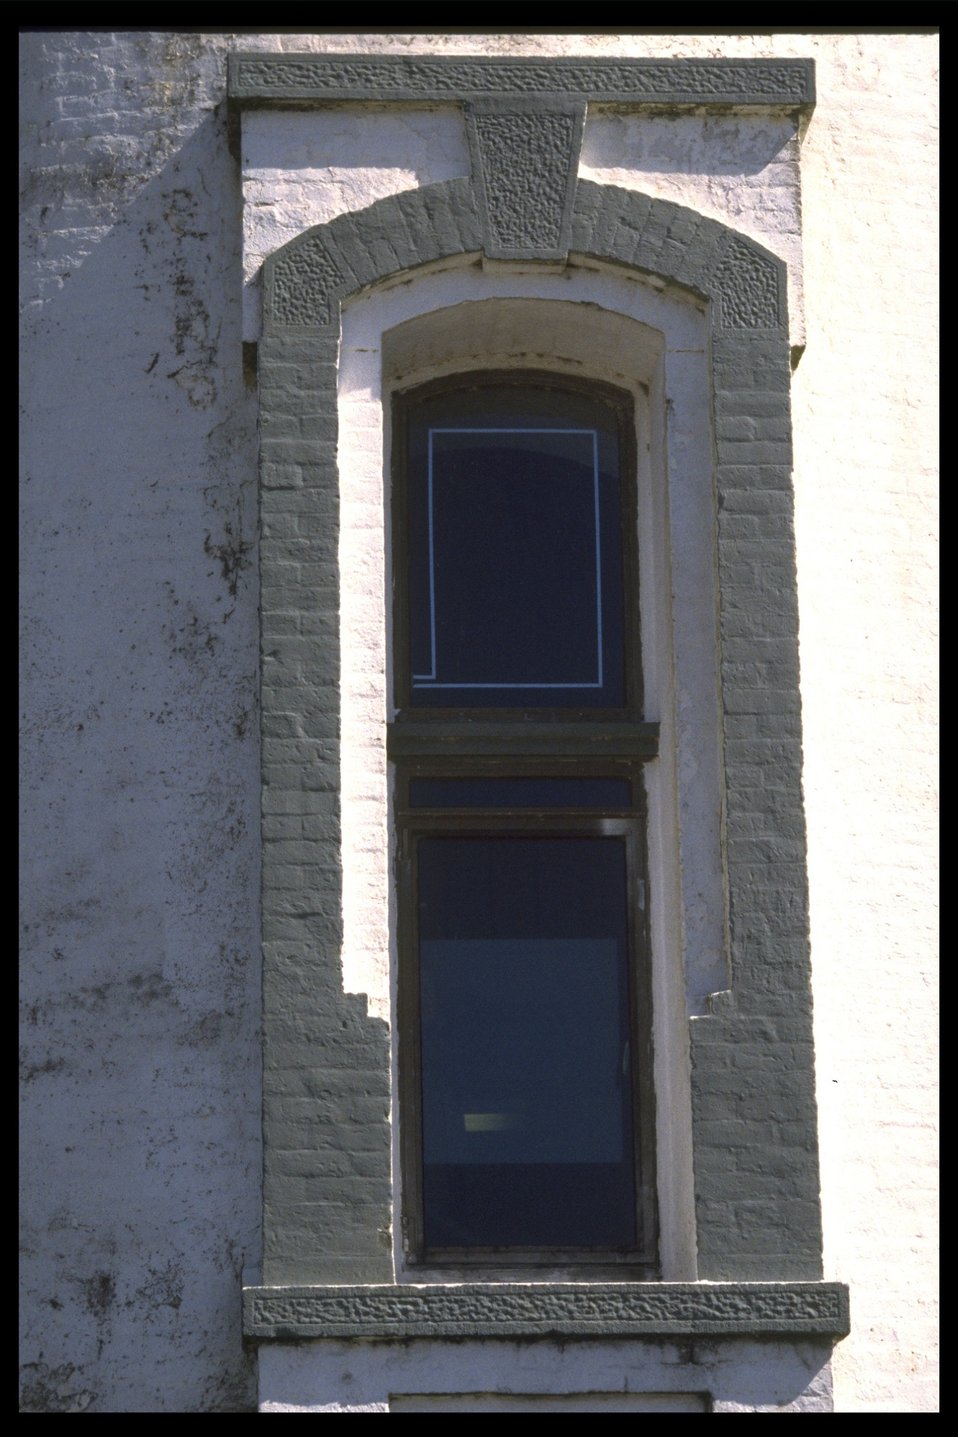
Window in Yaquina Head Lighthouse.